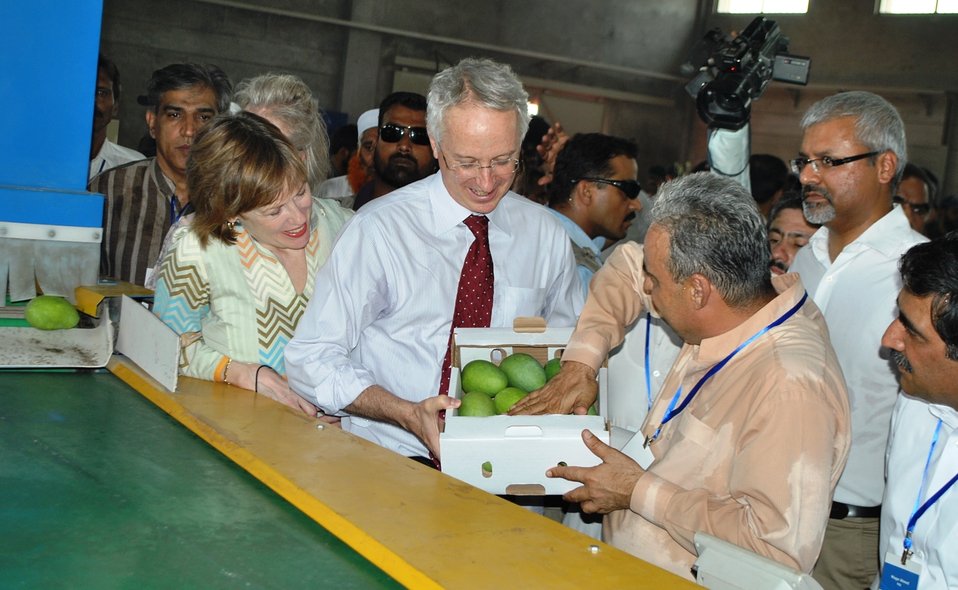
U.S. Helps Pakistani Farmers Export Mangos

Multan, July 24, 2011 - U.S. Ambassador Cameron Munter inaugurated a new U.S.-funded mango processing line at Lutfabad Farm. As a result of U.S-provided infrastructure upgrades, 13 farms in Southern Punjab will be able to export delicious Pakistani mangos to foreign markets. The U.S. partnership with mango producers is expected to yield a 30 million dollar increase in mango export revenue in the next two years, three million dollars of new investment, and 6,000 new jobs in Punjab and Sindh.